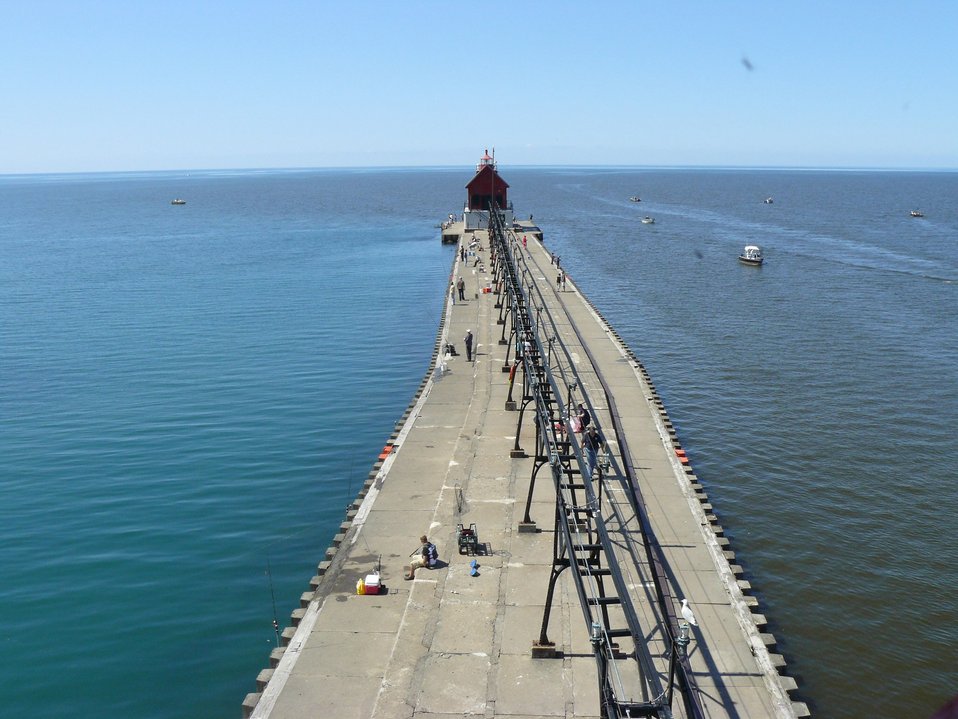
Grand Haven, Lake Michigan